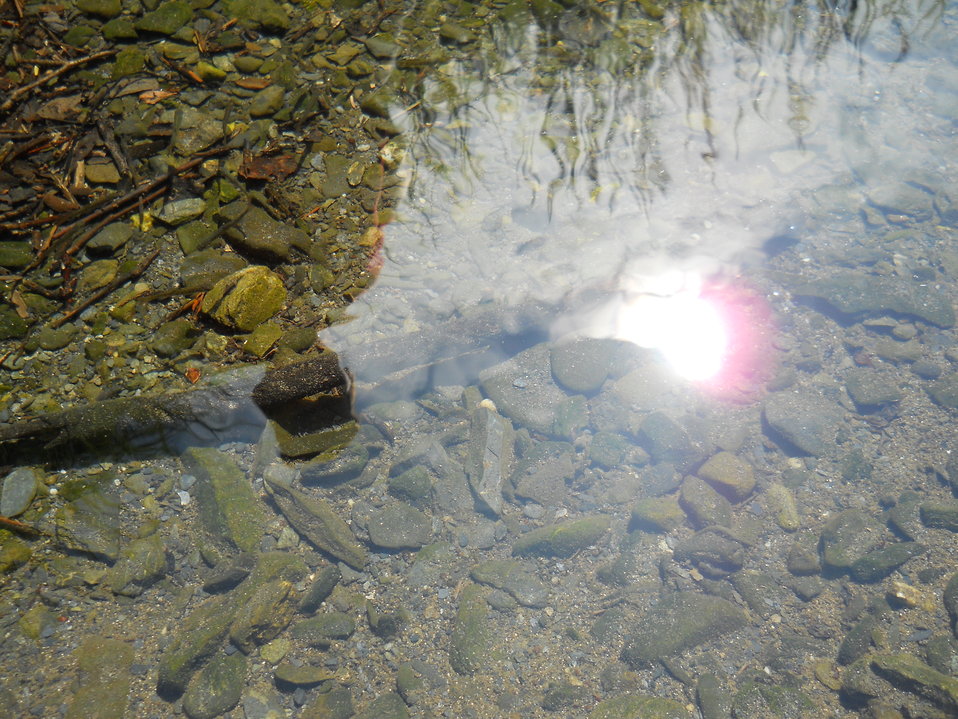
Shallow Pool

Credit: USFWS
Photo taken by a Salmon Camp participant during a nature photography activity.

Source and Contact: Kodiak National Wildlife Refuge